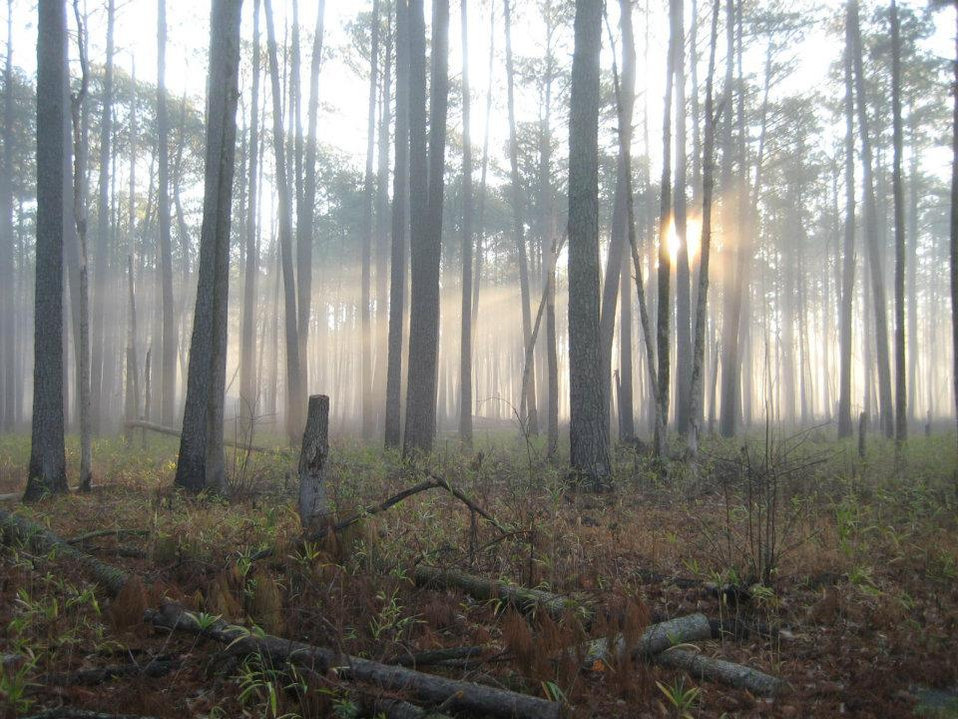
sunlight through the pines

This January 2012 photo captures morning light on the Pines Trail at Great Dismal Swamp National Wildlife Refuge along the NC-VA border.